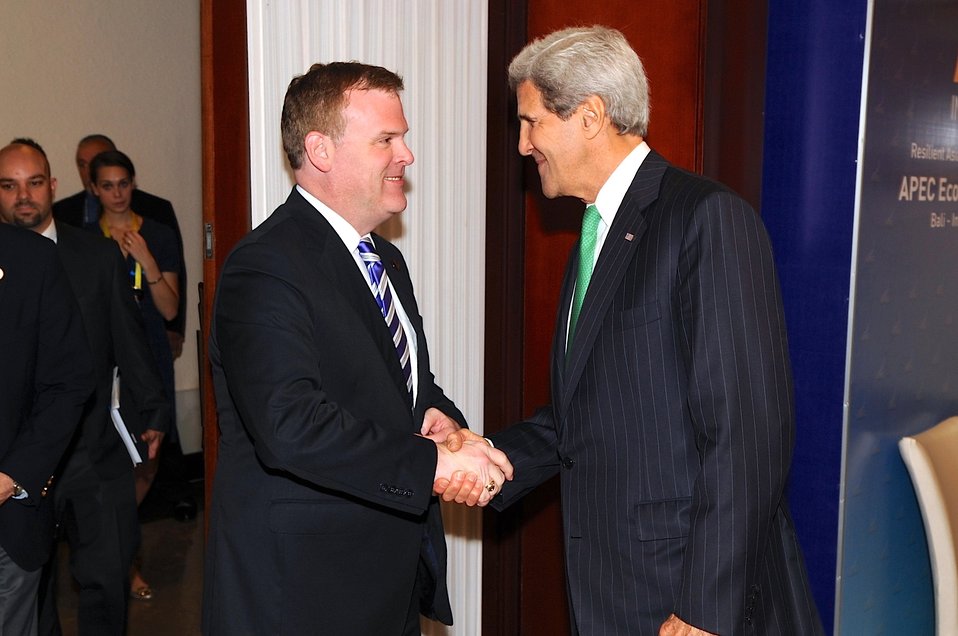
Secretary Kerry Shakes Hands With Canadian Foreign Minister Baird at APEC

U.S. Secretary of State John Kerry shakes hands with Canadian Foreign Minister John Baird before they held a bilateral discussion on the margins of the APEC Ministers meeting in Bali, Indonesia, on October 5, 2013.